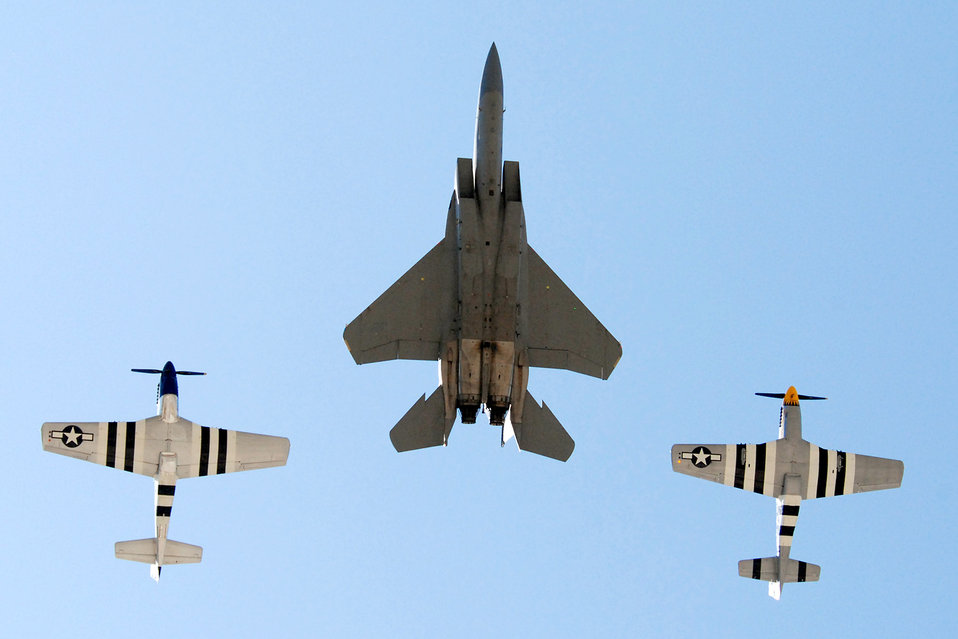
Heritage flight

The F-15 Eagle West Coast Demonstration Team and a pair of P-51 Mustangs fly in formation as part of the Heritage Flight during their final demonstration May 1 at Eglin Air Force Base, Fla. The Air Combat Command F-15 demo team has performed more than 150 times to spectators around the globe over the final two years. This is the final demonstration for the F-15C, completing a 26-year career that began in 1983.